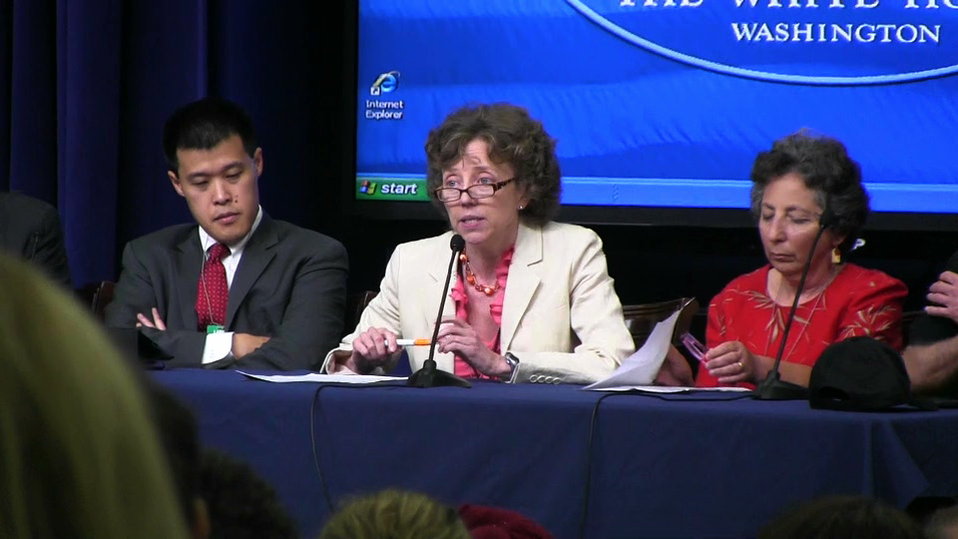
WHDpanel4